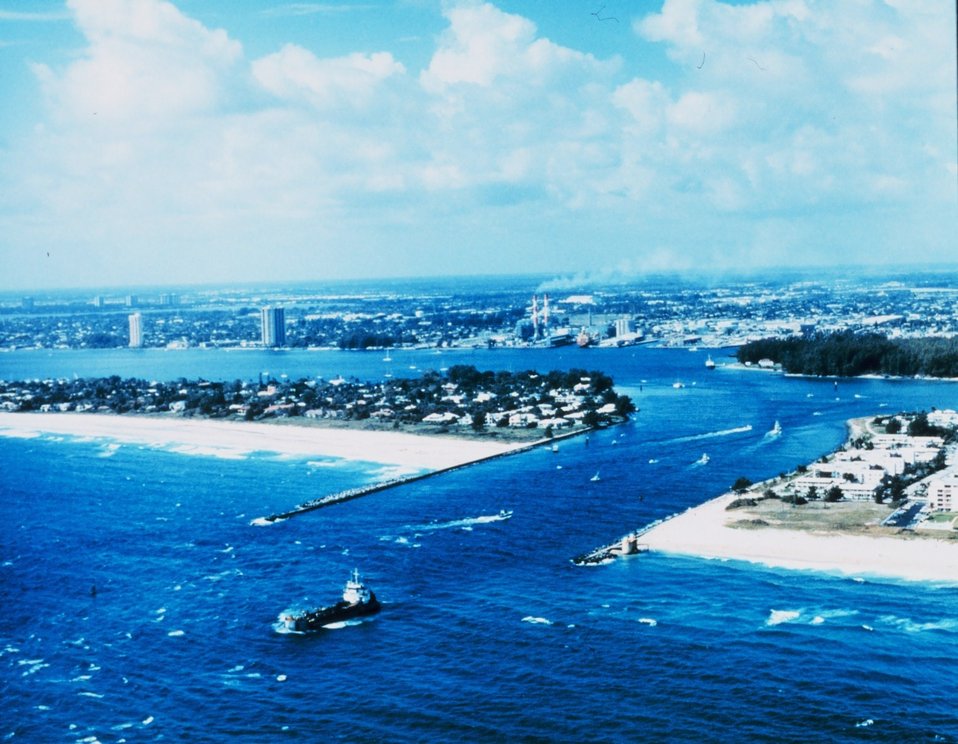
2942 North Latitude 8002 West Longitude.